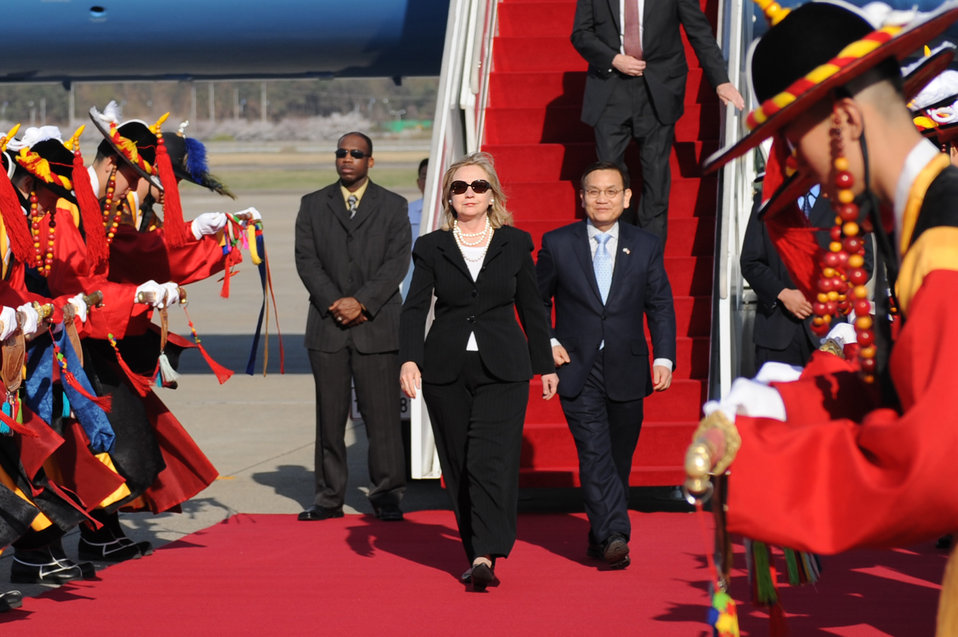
Secretary Clinton Is Escorted By Ministry of Foreign Affairs and Trade Deputy Director General Ahn Seung-doo

U.S. Secretary of State Hillary Rodham Clinton is escorted by Ministry of Foreign Affairs and Trade Deputy Director General Ahn Seung-doo upon her arrival in Seoul, South Korea, April 16, 2011.